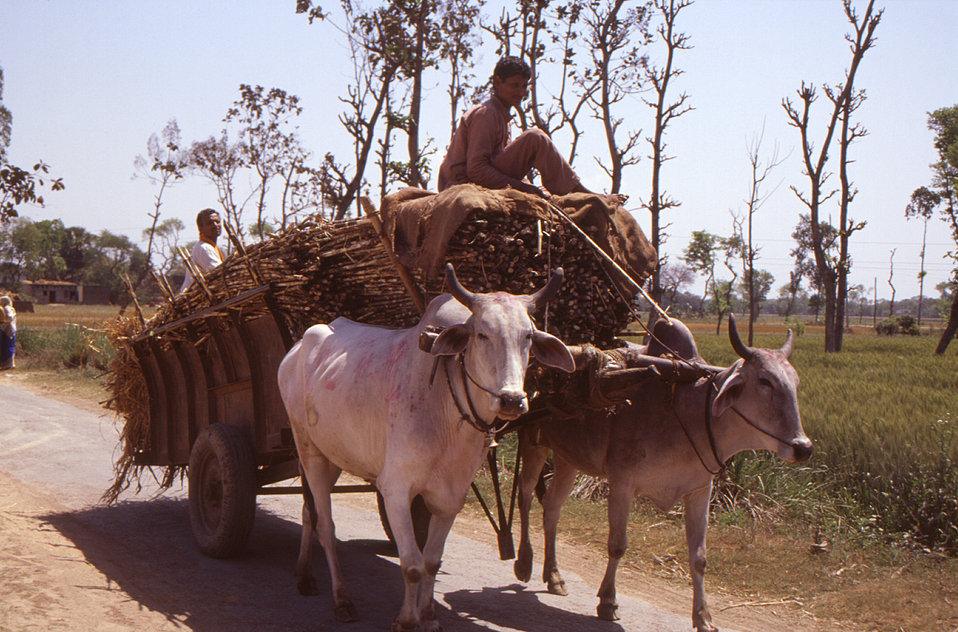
Transport of much of India's produce by way of ox-drawn cart is still practiced today. However, note the rubber tubed tires, which are used instead of what were once wooden wheels with spokes. This 2000 photograph was provided by Chris Zahniser, B.S.N., R.N., M.P.H., a STOP Transmission of Polio (STOP) immunization initiative team member and photographer. Ms. Zahniser was at the time assigned to the state of Uttar Pradesh in northern India, and spent three months working in the Districts of Gorakhpur and Deoria.